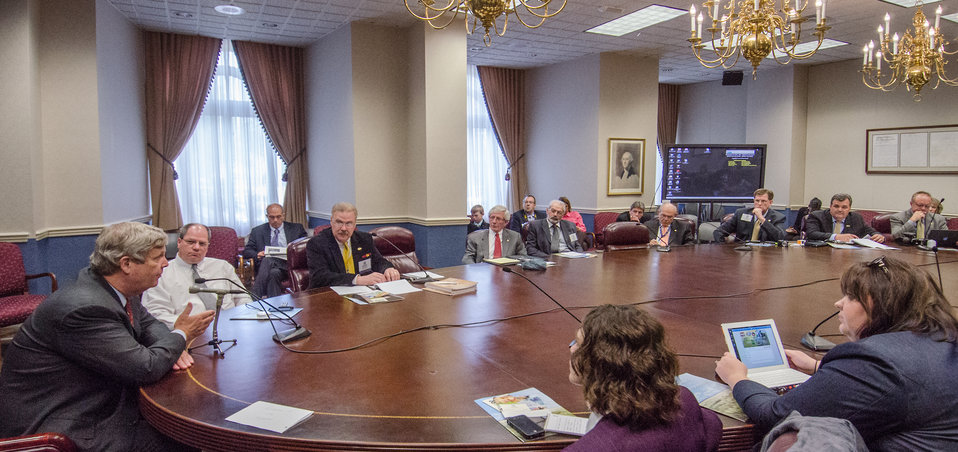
Agriculture Secretary Tom Vilsack speaks with and answers questions from farm broadcasters at the U.S. Department of Agriculture (USDA) on Tuesday, May 14, 2013, in Washington, D.C.